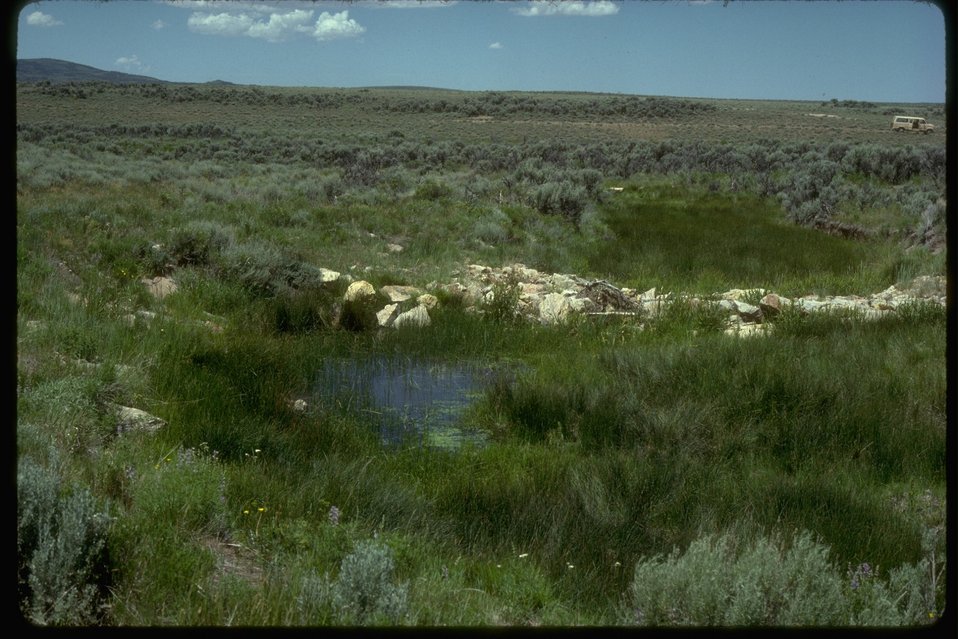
A gully plug in a riparian recovery area of Sheldon Refuge.